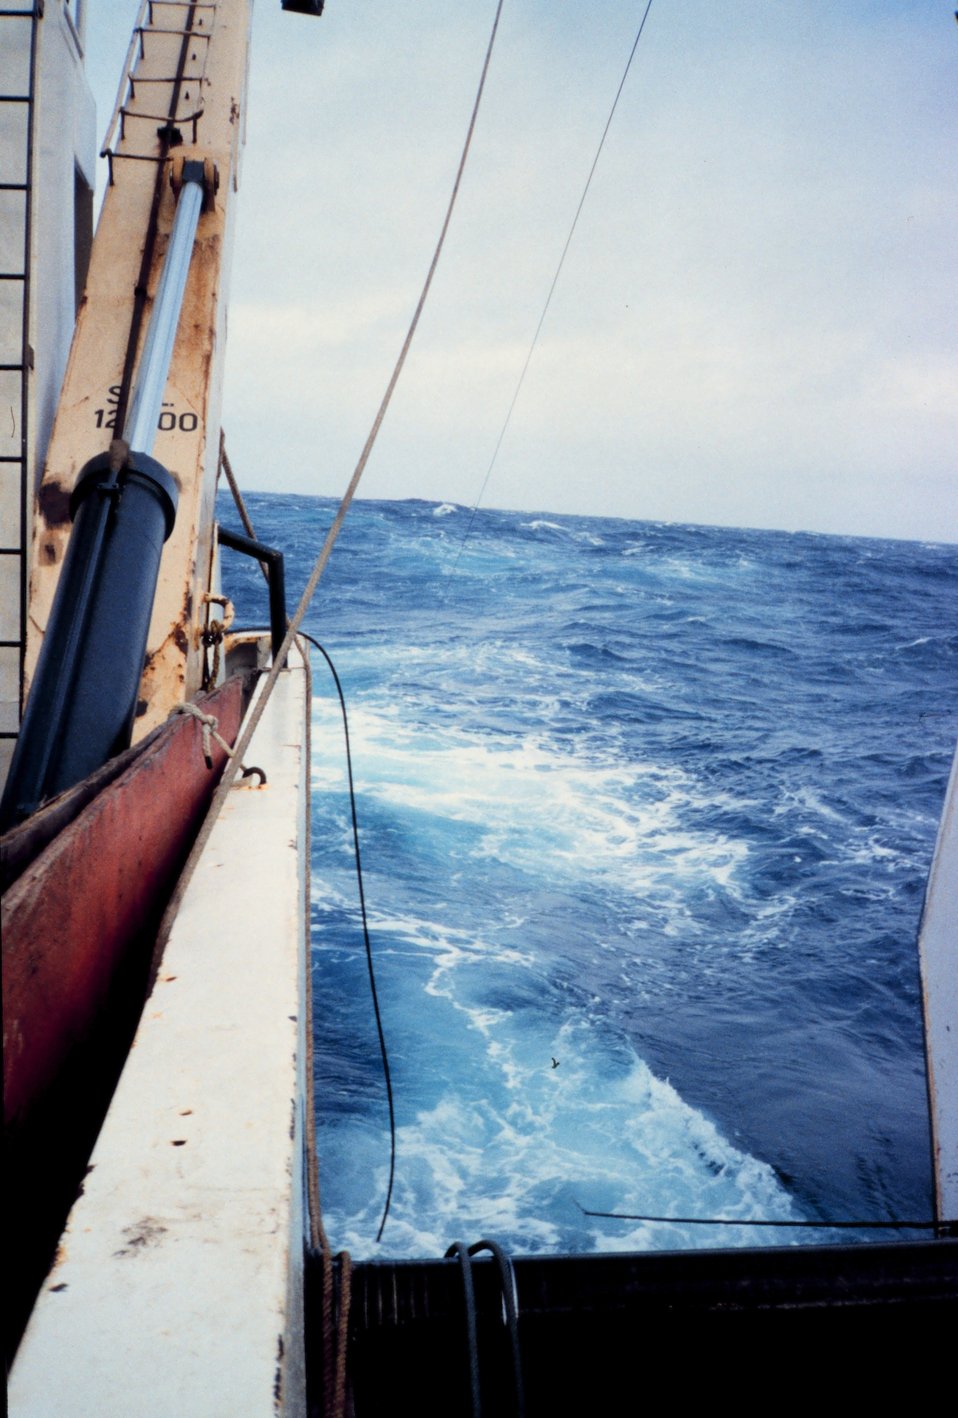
Trawl net being towed. Small diameter wire attached to net mensuration sensors and holds sensors at constant tension so as not to foul net.